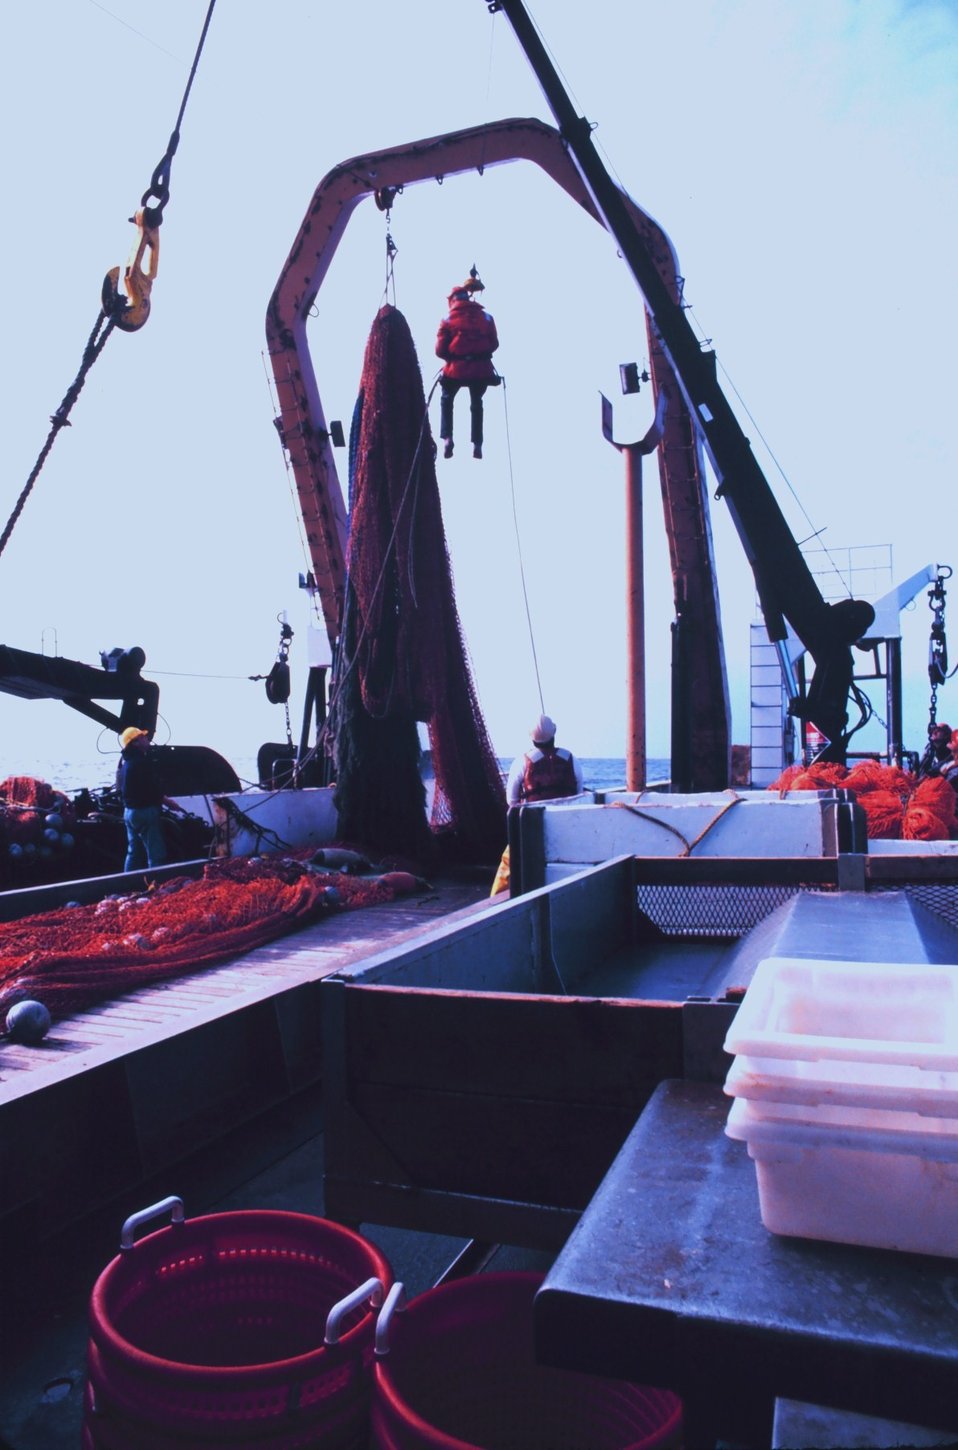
Crew of MILLER FREEMAN performing net maintenance duties